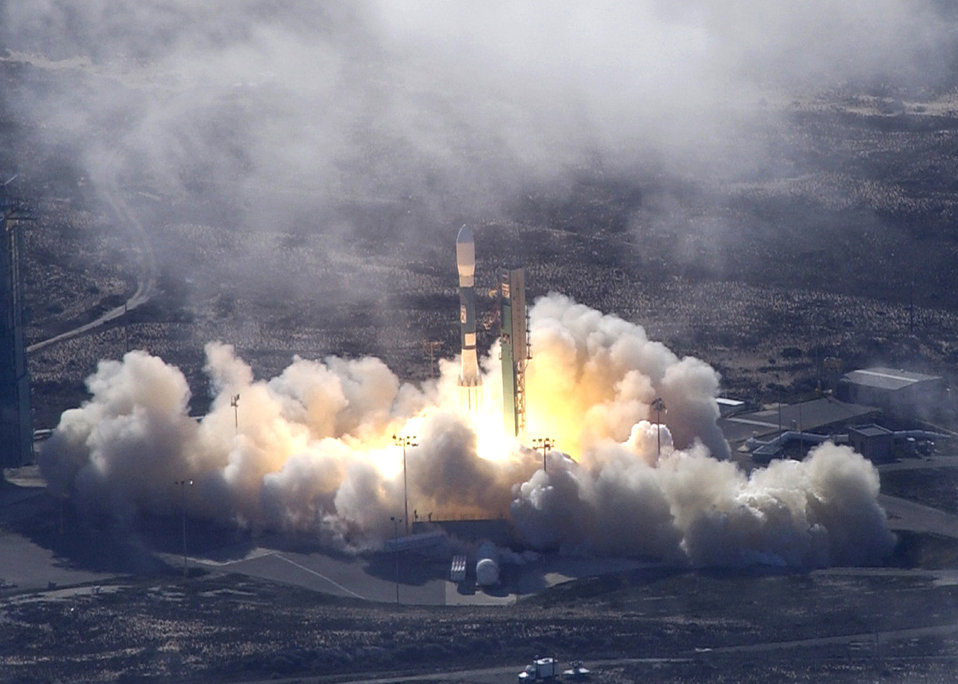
Vandenberg successfully launches Delta II

A Delta II rocket carrying a National Reconnaissance Office satellite successfully launches Dec. 14 from Space Launch Complex-2 at Vandenberg Air Force Base, Calif.